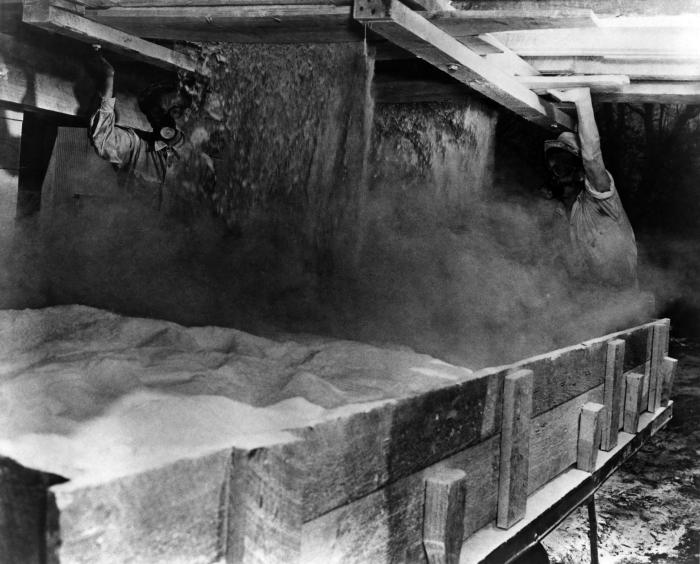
This April 1941 historical photograph was provided by the Center for Disease Control's (CDC), National Institute for Occupational Safety and Health (NIOSH). It depicted two industrial plant workers in Mobile, Alabama wearing respirators and goggles as they were loading crushed limestone. In the 1940s and 1950s, the Industrial Hygiene Division (IHD) investigated hazards associated with activities such as metal grinding. It was in scenarios such as this where there existed the potential for worker health problems associated with industrial metal grinding, including respiratory and dermatologic hazards from inhalation and contact with fungi- and bacteria-contaminated synthetic metal-working fluids, oil mists, and grinding dust in the machining areas.